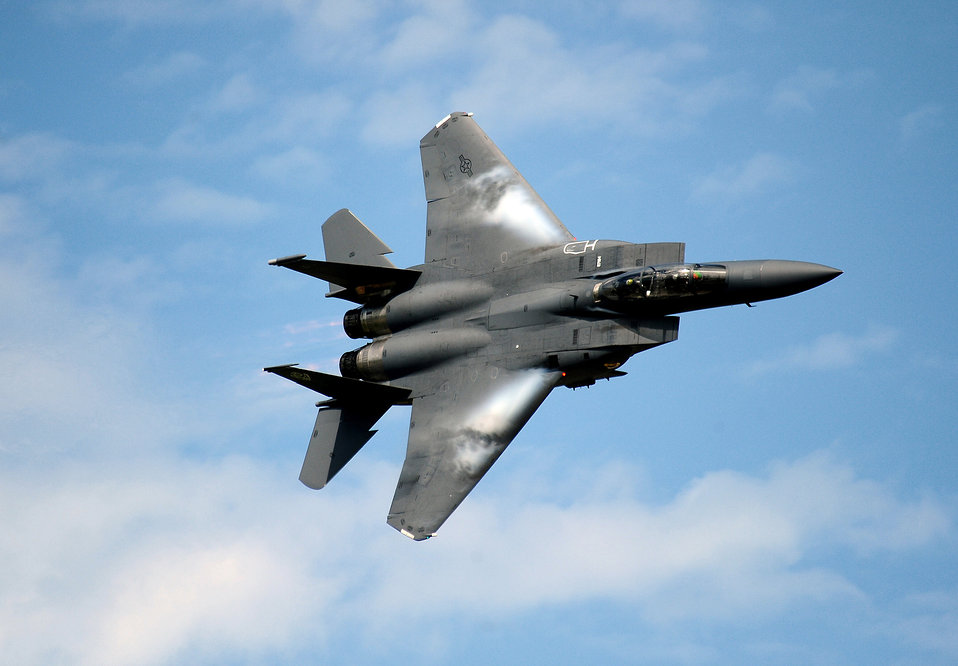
Defender of freedom

An F-15E Strike Eagle soars over the runway Aug. 27, 2011, at Offutt Air Force Base, Neb., during the 2011 Defenders of Freedom Open House and Air Show. The F-15E is a dual-role fighter that can perform air- to-air and air-to-ground missions.